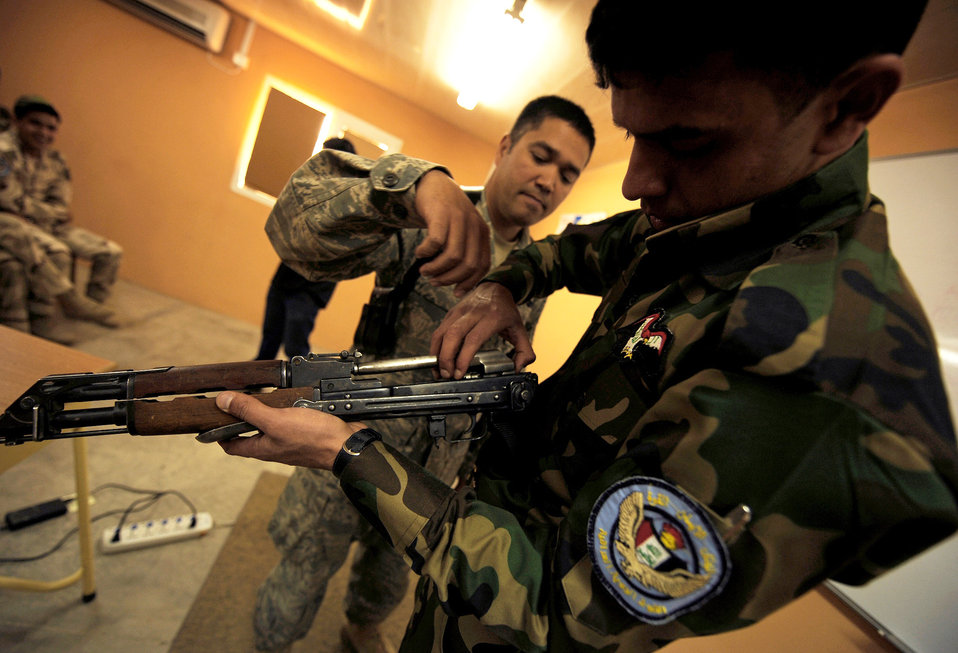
North to south: U.S. defenders train Iraqi partners

Tech. Sgt. Daniel Delossantos helps an Iraqi airman reassemble an AK-47 rifle during a two-week training course April 5. Sergeant Delossantos is assigned to the 407th Expeditionary Security Forces Squadron.